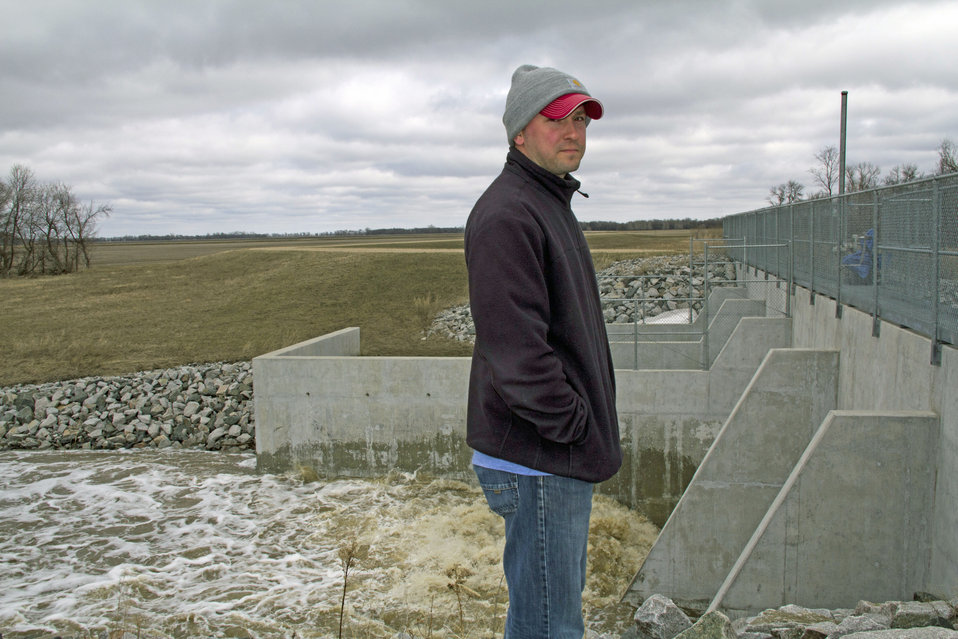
U.S. Department of Agriculture (USDA) Natural Resource Conservation Service (NRCS) Minnesota District Conservationist Kevin Gietzen views the Snake River Diversion Structure near Warren, MN. USDA’s Natural Resources Conservation Service has designed a flood control system for Warren that has an off-river channel impoundment and a floodway that is helping to mitigate flooding.